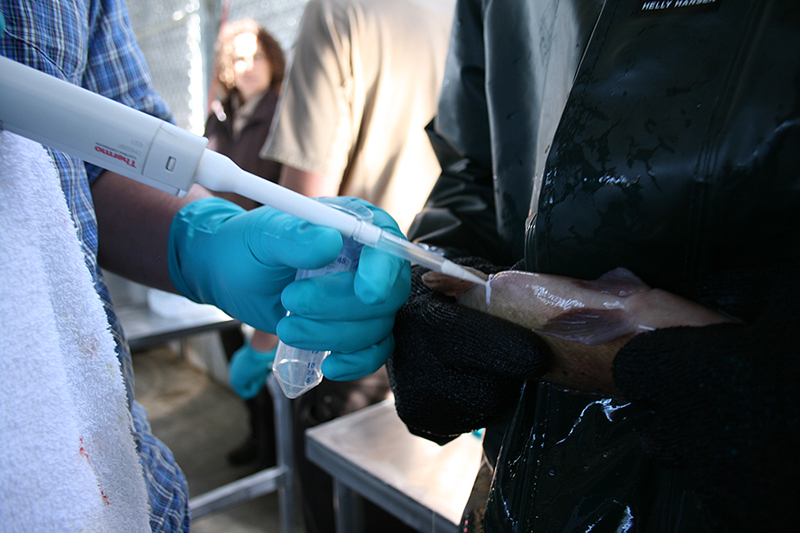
Removing milt from a male

Biologists collect milt from anesthetized males into test tubes with a pipette. Each test tube is labeled with the pit tag information of that specific fish so it can later be matched with female eggs.